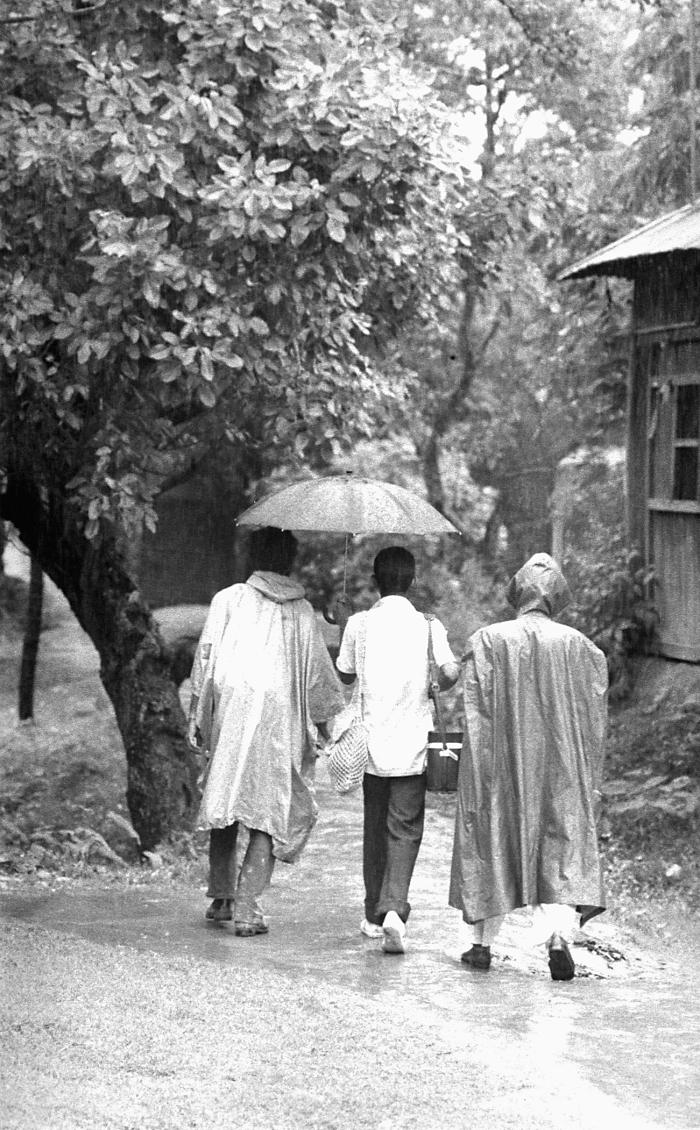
These smallpox eradication program workers were carrying out their assignments on a rainy day in Bangladesh. A team member's work schedule called for twenty-five consecutive days of work per month, rain or shine. This image was part of a series provided by Dr. Stan Foster, and captured by Pierre Claquin, M.D., B.A.C., who at the time was a member of the World Health Organization's Smallpox Eradication Program. It was part of a series photographed by former E.I.S. officer, Stanley O. Foster M.D., M.P.H., and was one of a series entitled 'The Story of One Smallpox Jeep', which depicted the travails faced by the jeep, and its occupants of public health practitioners, as they road through the Bangladesh countryside in an attempt to eradicate smallpox from the country.